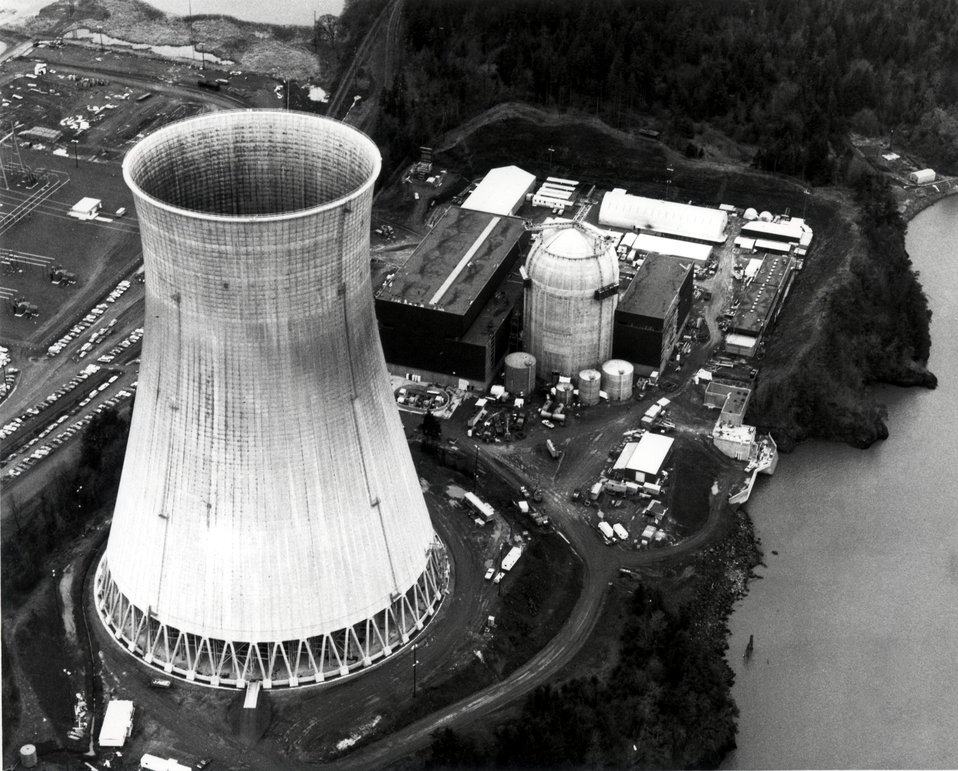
Trojan, Portland General Electric's Trogan Nuclear Power Plant is located on the Columbia River near Prescott, Illinois. Circa 1974.